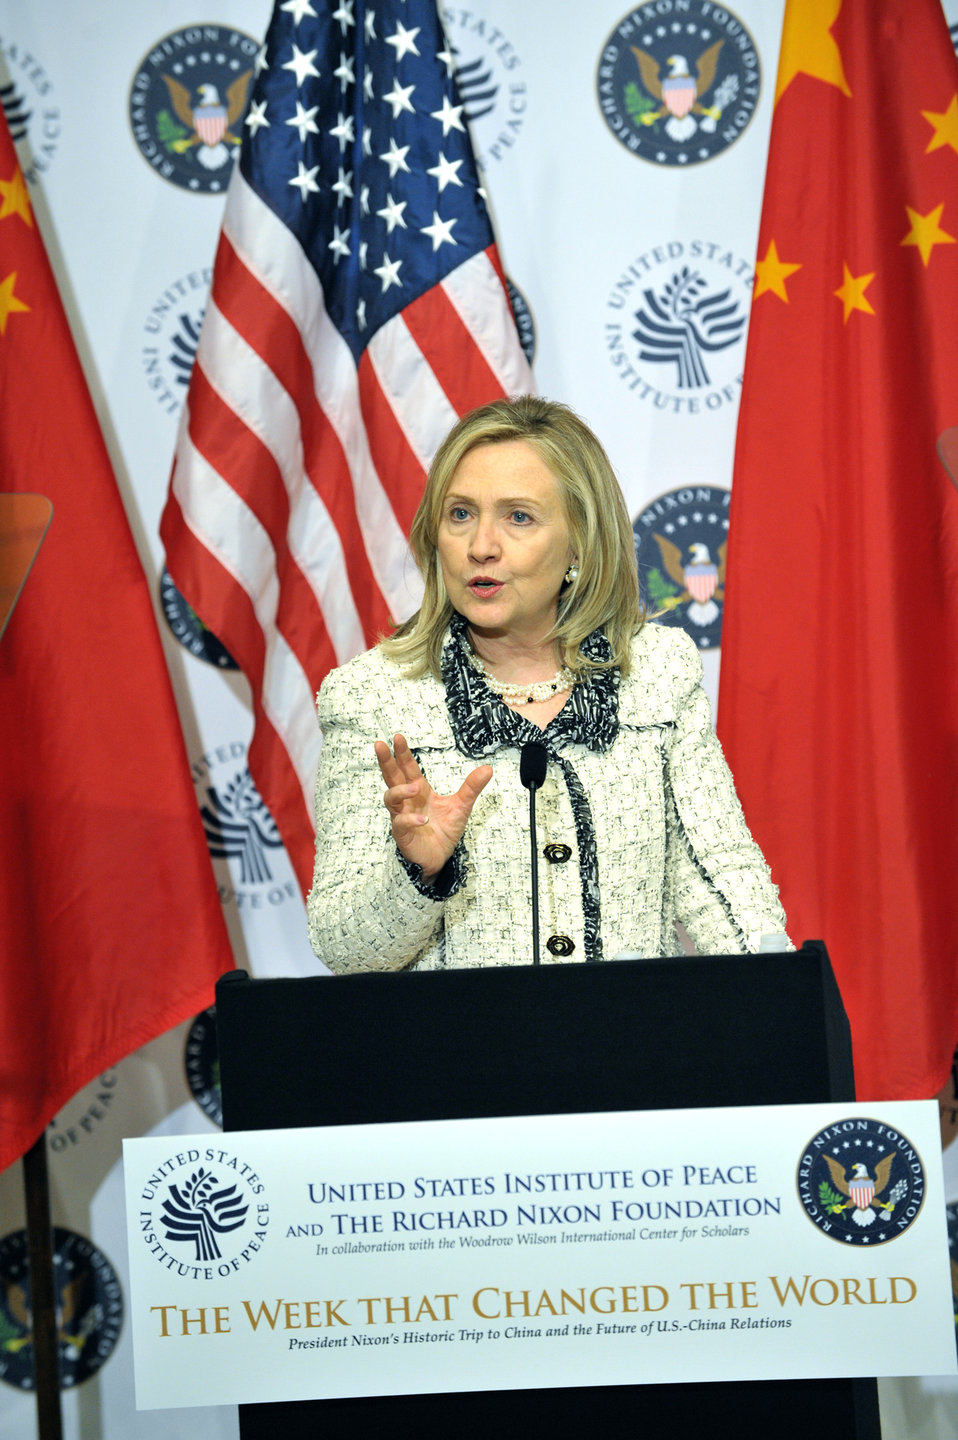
Secretary Clinton Delivers Remarks on U.S.-China Relations

U.S. Secretary of State Hillary Rodham Clinton delivers remarks at the event, “The Week that Changed the World: President Nixon’s Historic Trip to China and the Future of U.S.-China Relations,” co-hosted by the U.S. Institute of Peace (USIP) and the Richard Nixon Foundation, at USIP in Washington, D.C., on March 7, 2012.